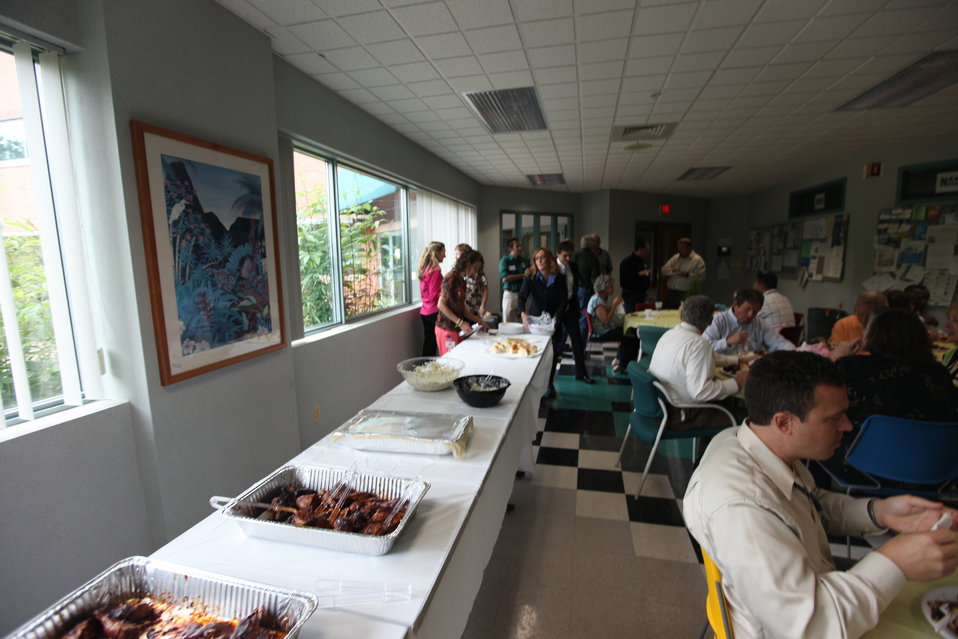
Northeast Region Employee Appreciation Awards

Luncheon